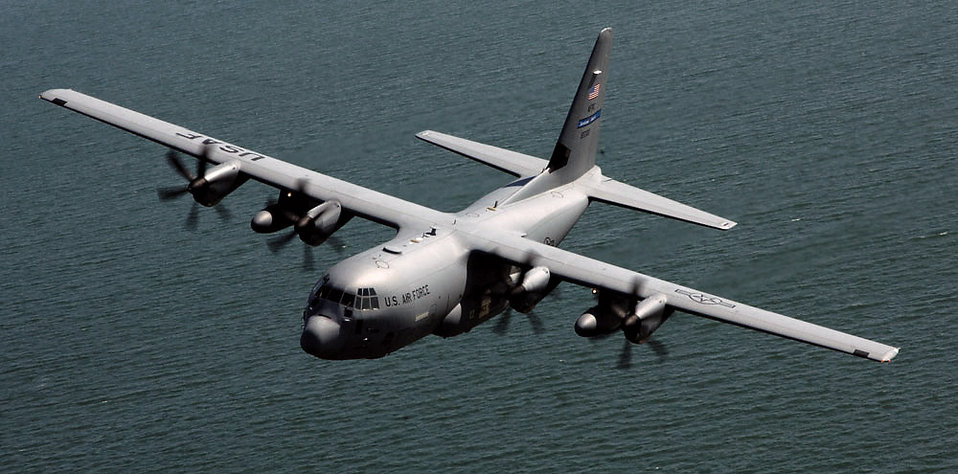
Hurricane Hunters

A WC-130J Hercules from the 53rd Weather Reconnaissance Squadron Hurricane Hunters flies a mission. The Air Force Reserve squadron is part of the 403rd Wing at Keesler Air Force Base, Miss. The data collected by the Hurricane Hunters increases the accuracy of the National Hurricane Center Forecast by 30 percent.